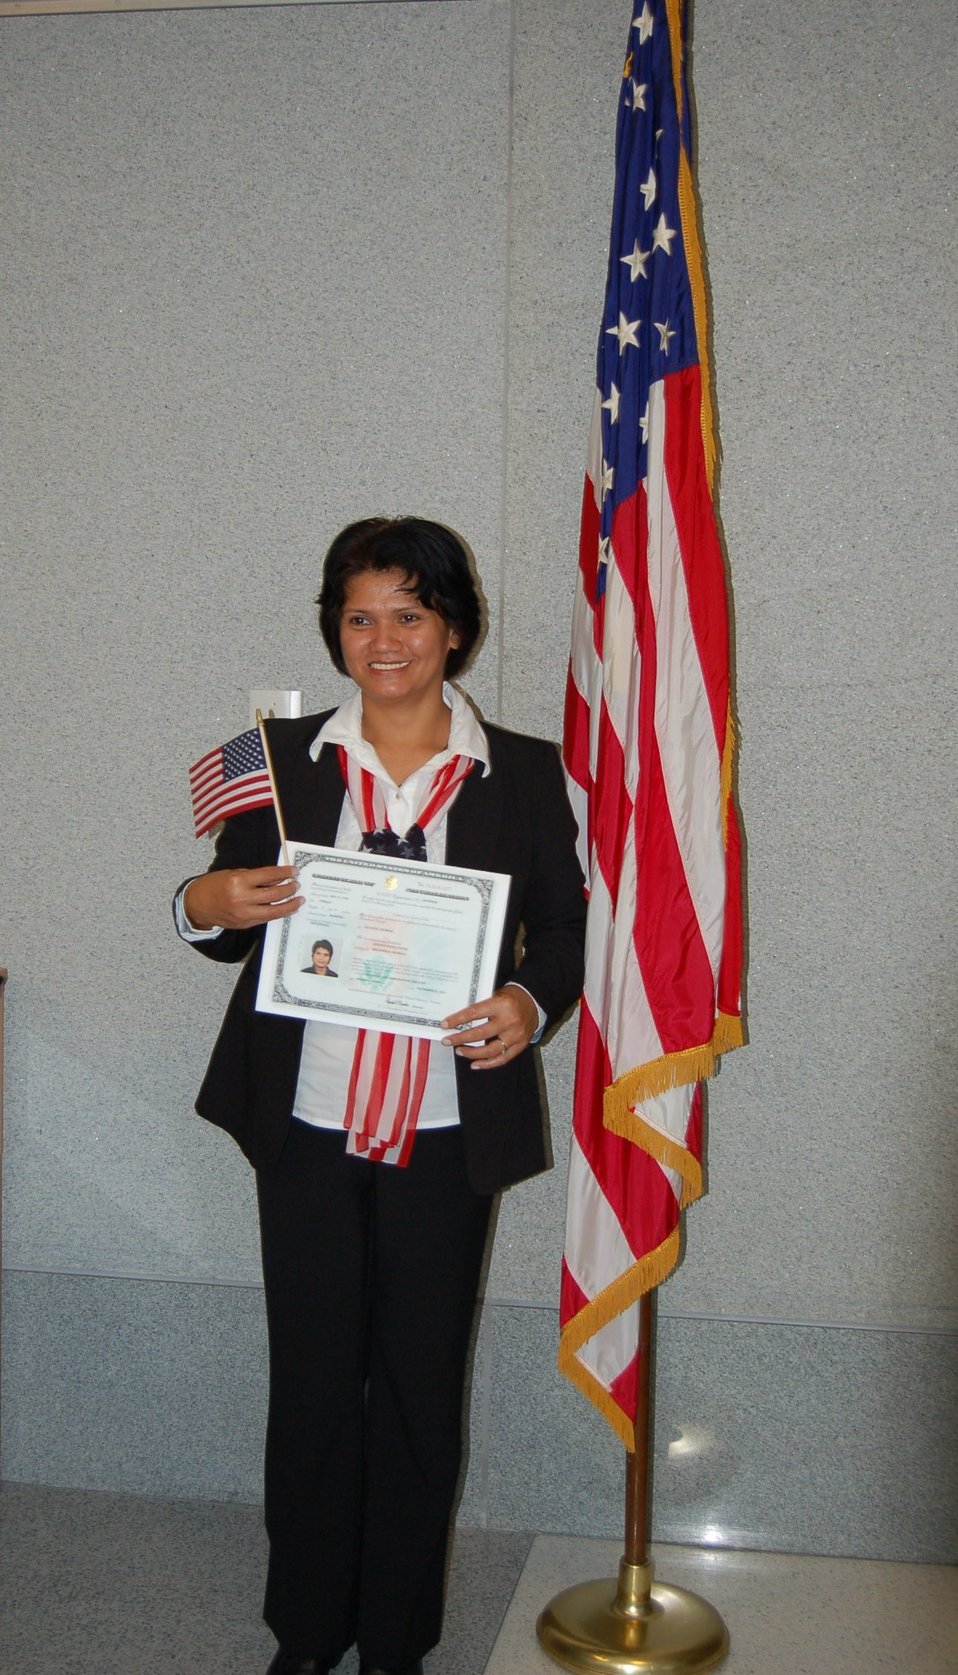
New Citizens